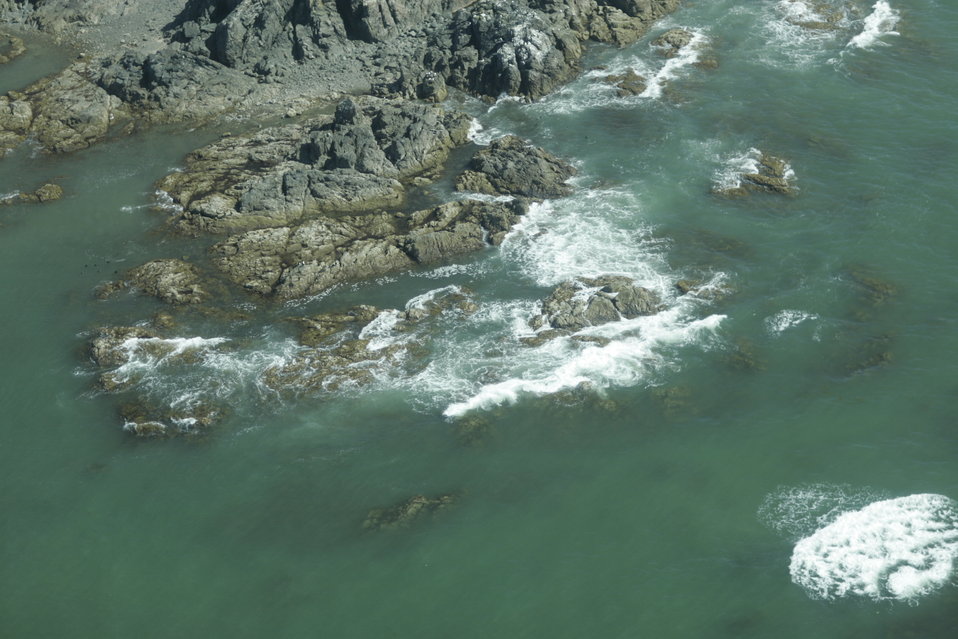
Togiak Nation Wildlife Refuge